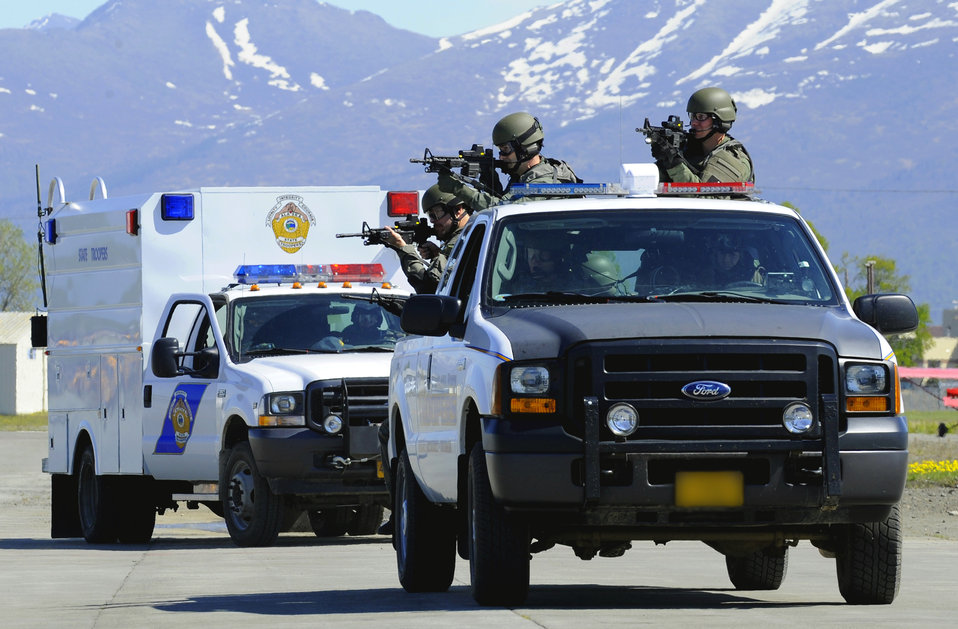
Artic Fencing Interagency Arrow 2010

An FBI and Alaska State Trooper joint SWAT team move toward an aircraft during Arctic Fencing Interagency Arrow 2010 field training exercise May 26, 2010, at Elmendorf Air Force Base, Alaska.